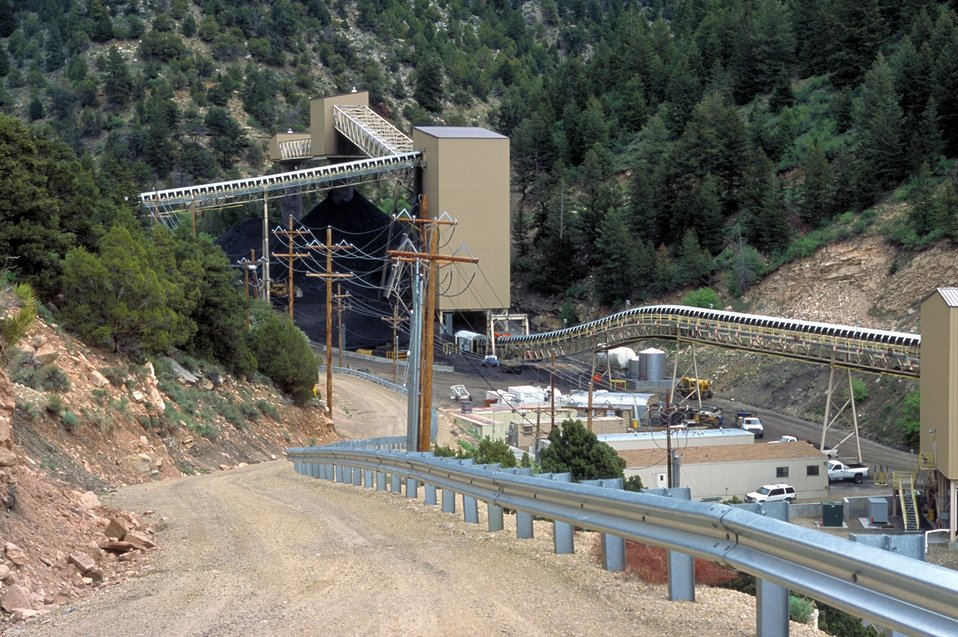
Coal production near Price, Utah.